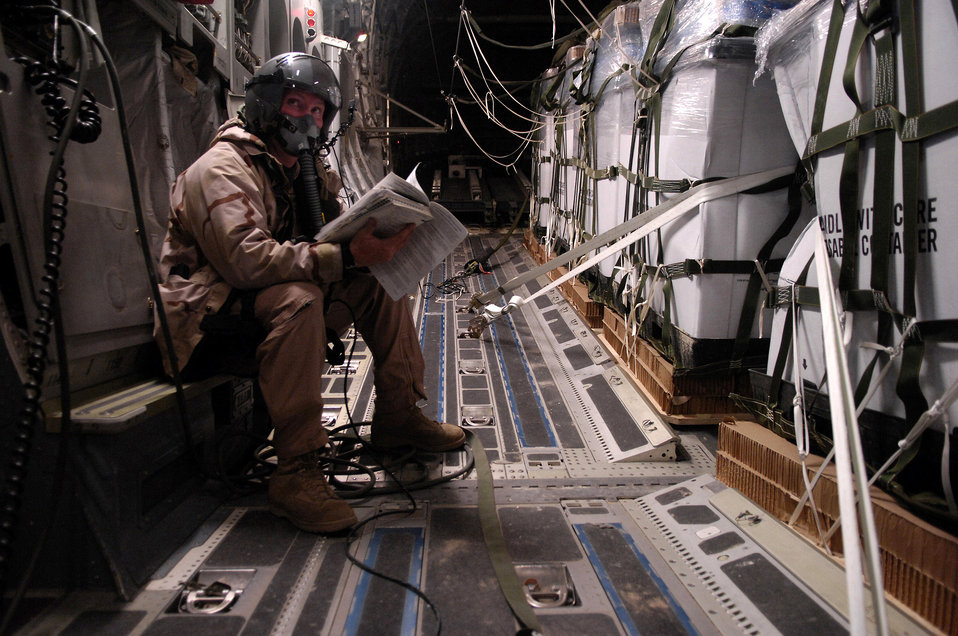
Airmen airdrop 80,000 pounds of food, supplies for Afghans

Staff Sgt. Chris Koch reviews the checklist on a C-17 Globemaster III for a Joint Precision Airdrop Delivery System of 40 bundles of humanitarian supplies to a drop zone Jan. 14 in Afghanistan. Sergeant Kock is a loadmaster from the 17th Airlift Squadron from Charleston Air Force Base, S.C., and is deployed to the 816th Expeditionary Airlift Squadron in Southwest Asia.